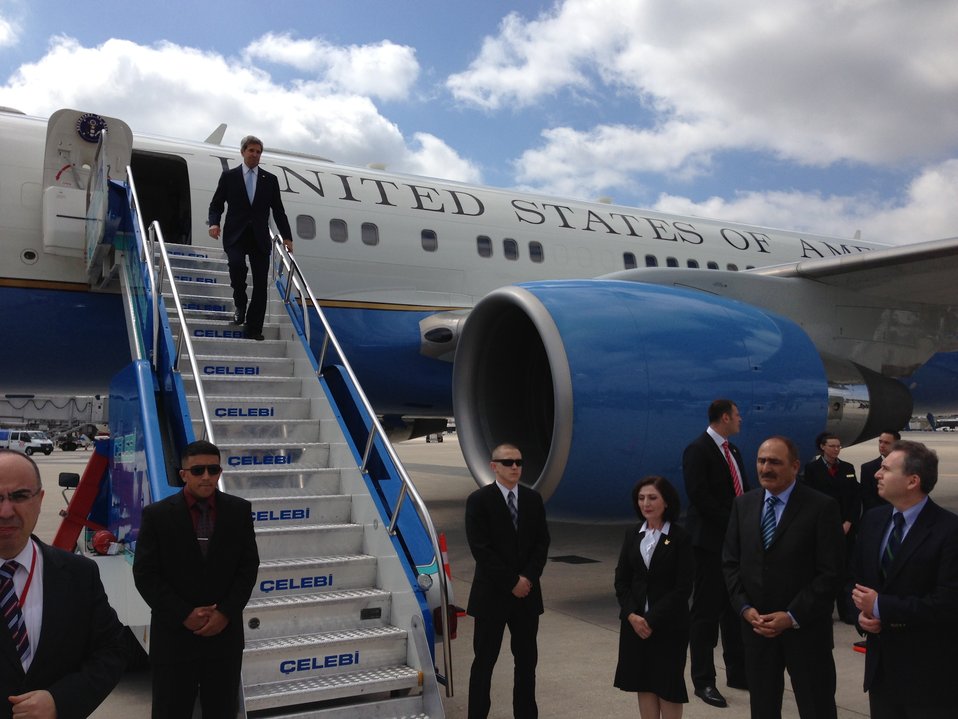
Secretary Kerry Arrives in Istanbul

U.S. Secretary of State John Kerry arrives in Istanbul, Turkey on April 20, 2013.